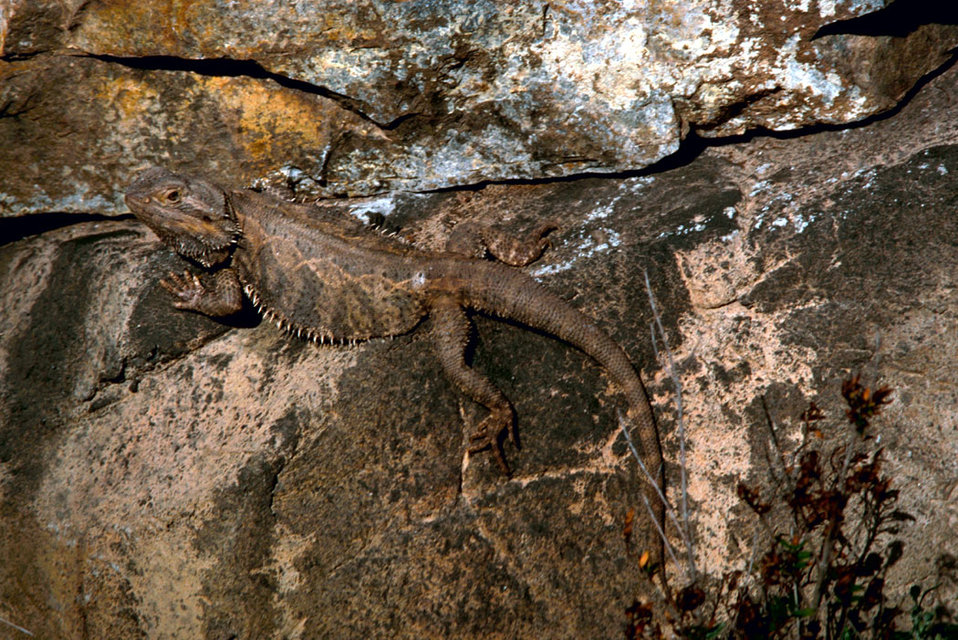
Bearded dragon lizard

Close view of a bearded dragon lizard on a rock.